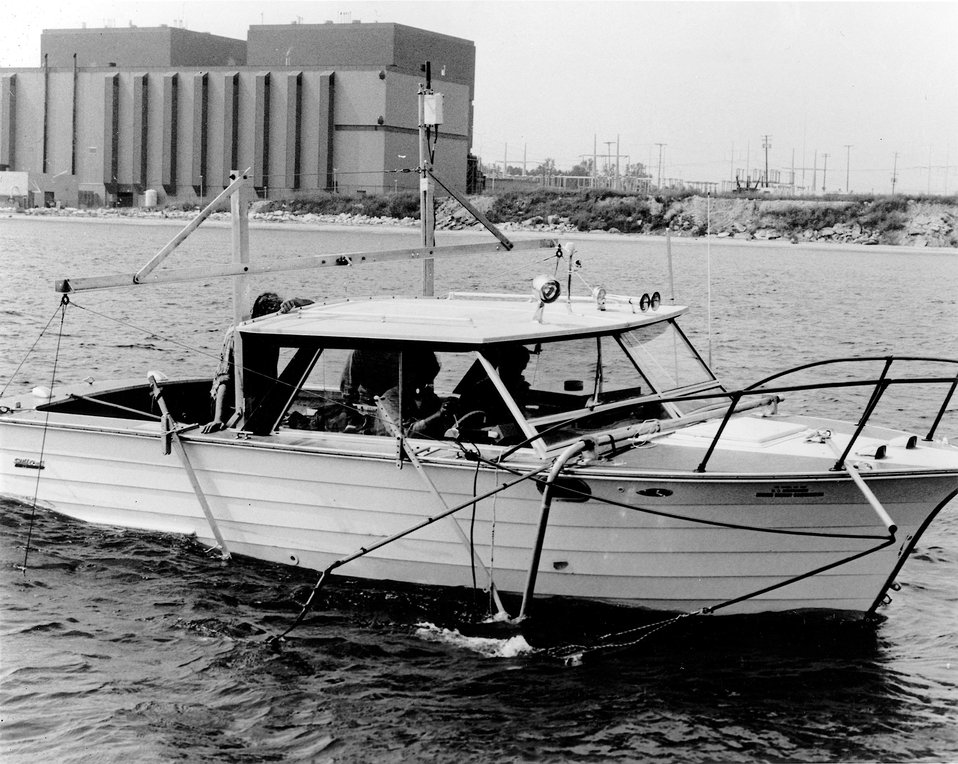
Argonne research vessel maps the warm water discharge plume from the Point Beach Nuclear Power Station.
c.1973